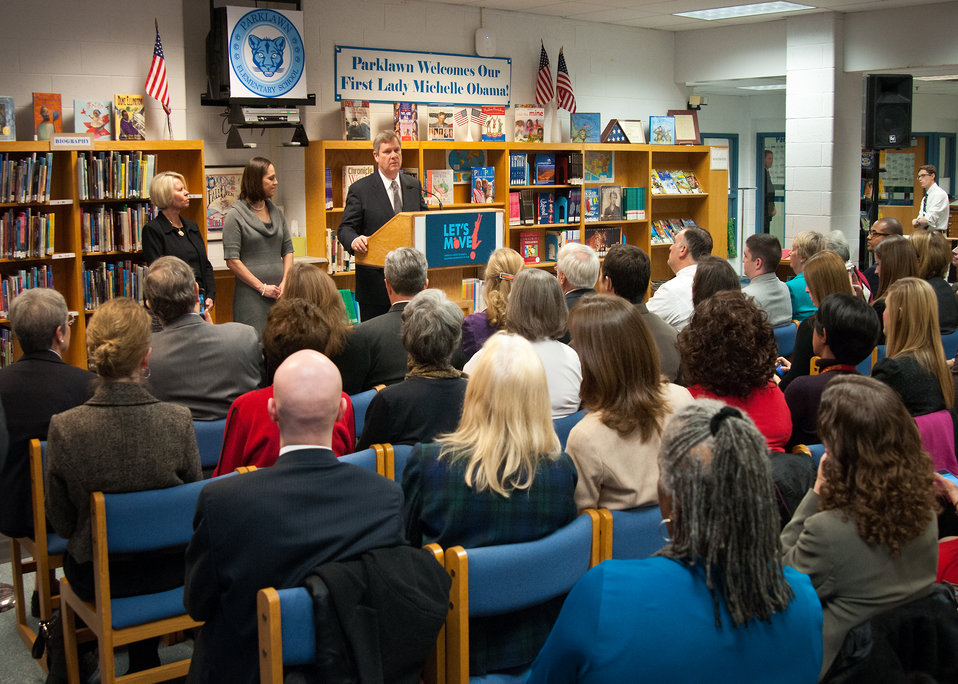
20120125-OSEC-RBN-New Nutrition Standards

Agriculture Secretary Tom Vilsack joined First Lady Michelle Obama and celebrity cook Rachel Ray at Parklawn Elementary School in Alexandria, Virginia, on Wednesday, January 25, 2012 to speak with faculty and parents about the United States Department of Agriculture’s new and improved nutrition standards for school lunches. An important accomplishment of the Healthy, Hunger-Free Kids Act that President Obama signed into law last year, USDA is making the first major changes in school meals in over 15 years. The new standards encourage fruits and vegetables every day of the week, increasing offerings of whole grain-rich foods, offering only fat-free or low-fat milk and making sure kids are getting proper portion sizes.